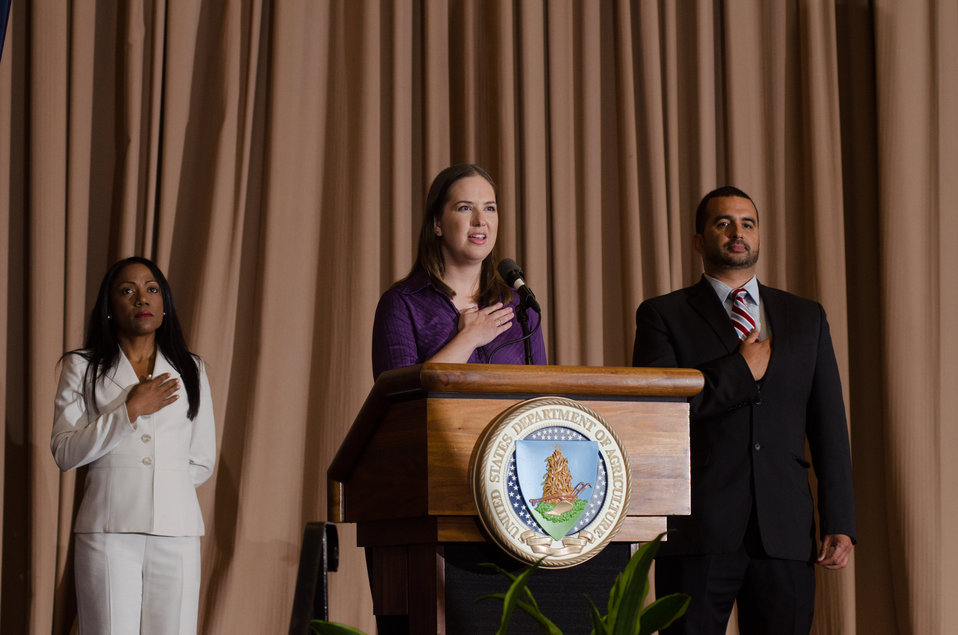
U.S. Department of Agriculture (USDA) Office of Human Resources Management, Program Specialist Bonnie Hayes sings the National Anthem, during the 2013 National Hispanic Heritage Month ”Hispanics: Serving and Leading our Nation with Pride and Honor,” on Thursday, Sept. 19, 2013, in the Jefferson Auditorium, USDA Headquarters, Washington, D.C.